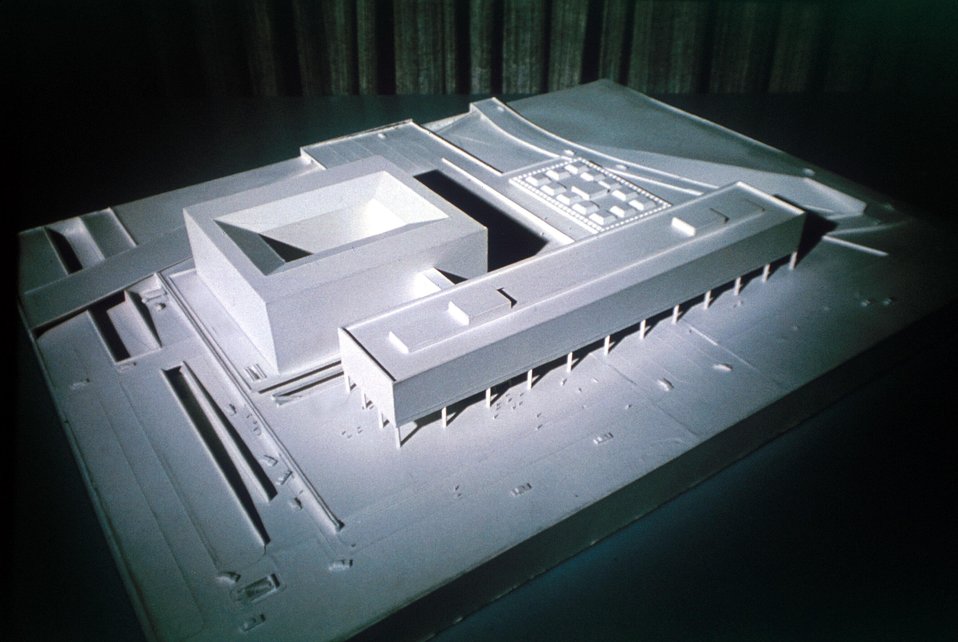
Federal Office building No. 5 Washington DC